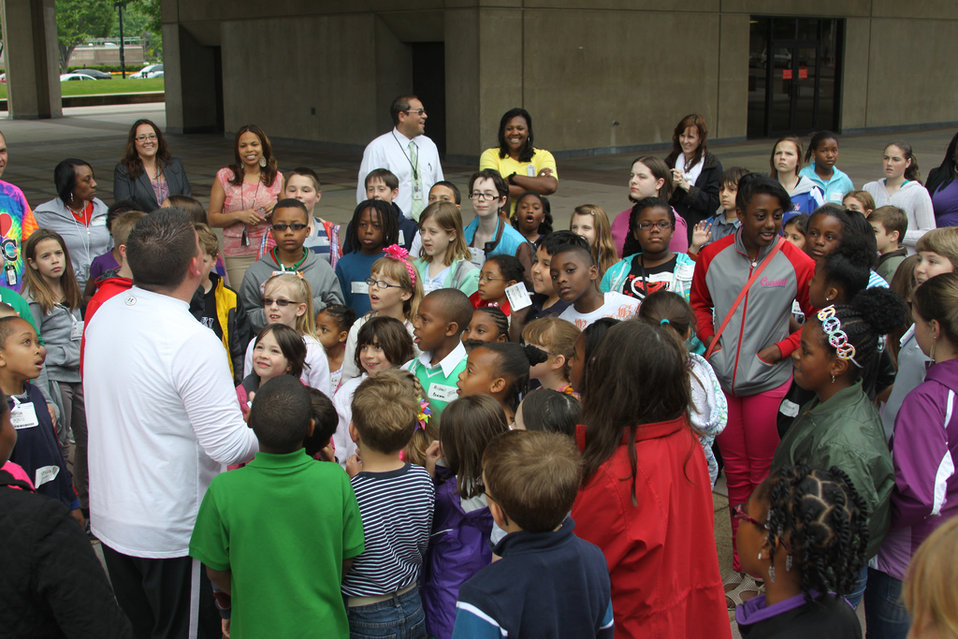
Group Outdoors